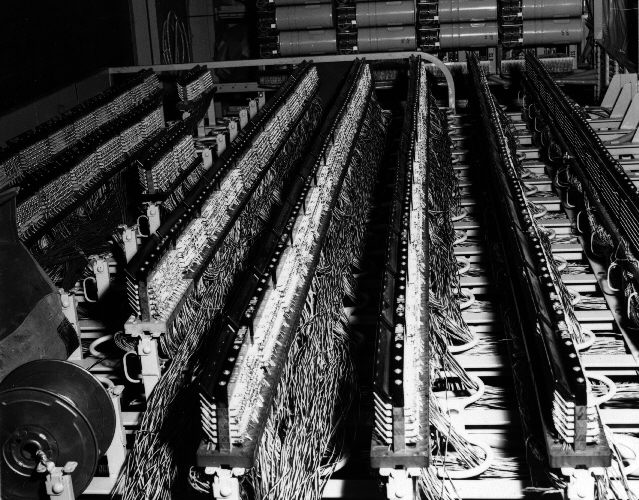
CDC switchboard equipment